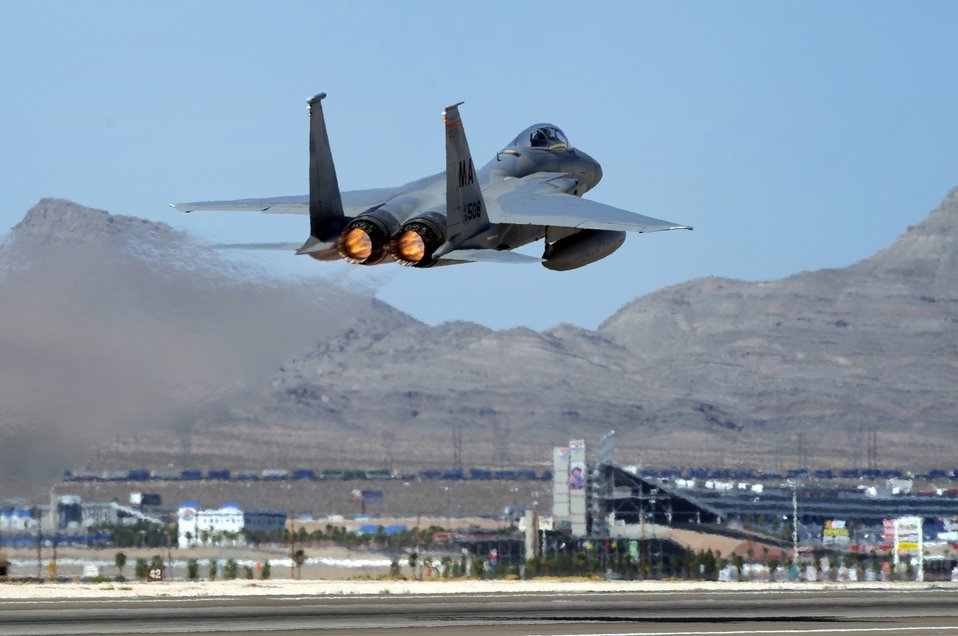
Red Flag trains combat air forces

An F-15 Eagle takes off for a Red Flag 09-5 training mission Aug. 26, 2009, at Nellis Air Force Base, Nev. The two-week exercise is administered through the 414th Combat Training Squadron at Nellis AFB and is just one in a series of advanced training programs offered by the U.S. Air Force Warfare Center. The aircraft is assigned to the Massachusetts Air National Guard's 131st Fighter Squadron in Westfield, Mass.